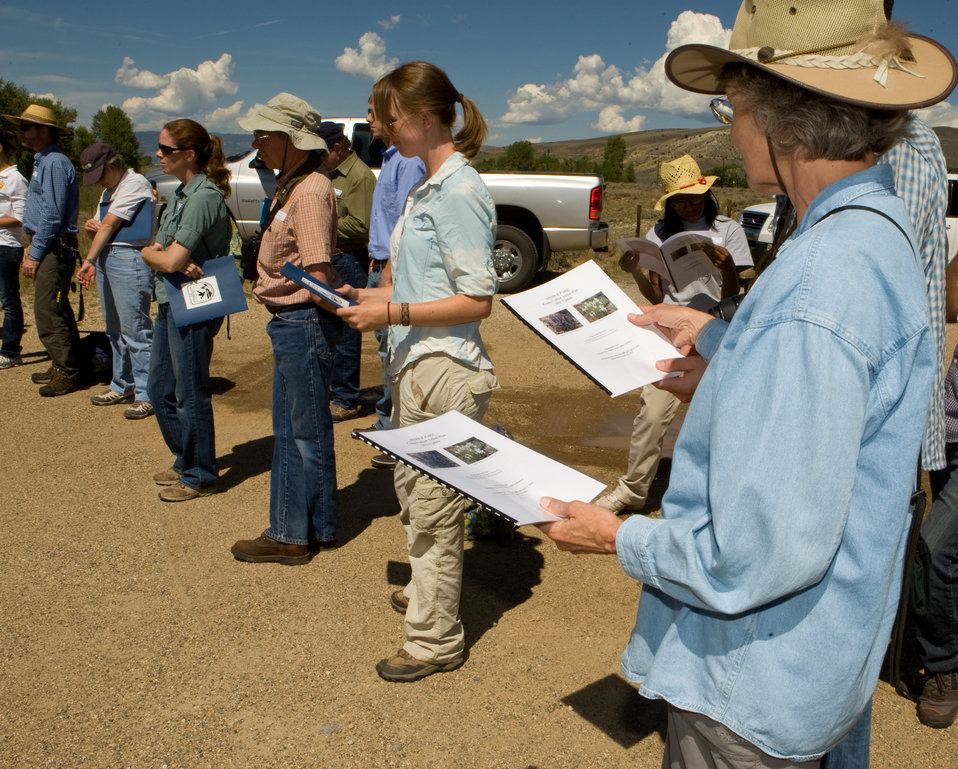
Colorado Rare Plant Conservation Initiative

The Colorado Rare Plant Conservation Initiative (RPCI) is a partnership of 23 statewide and regional agencies, private organizations, and academic institutions working to conserve 121 rare plants in Colorado. As part of these efforts the group developed the Colorado Rare Plant Conservation Strategy, developed Best Management Practices to reduce energy development impacts, addressed climate change, and developed focused strategies for the conservation of individual species at eight priority landscapes. The group has also worked to coordinate volunteer efforts for plant conservation across the state.